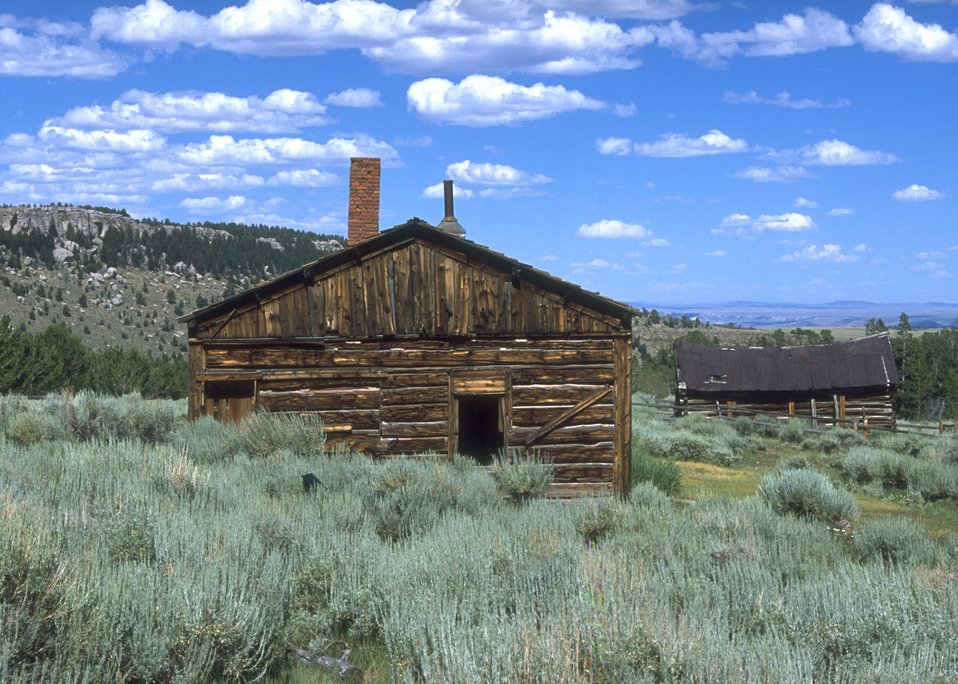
Structures at Miners Delight, Lander Field Office.